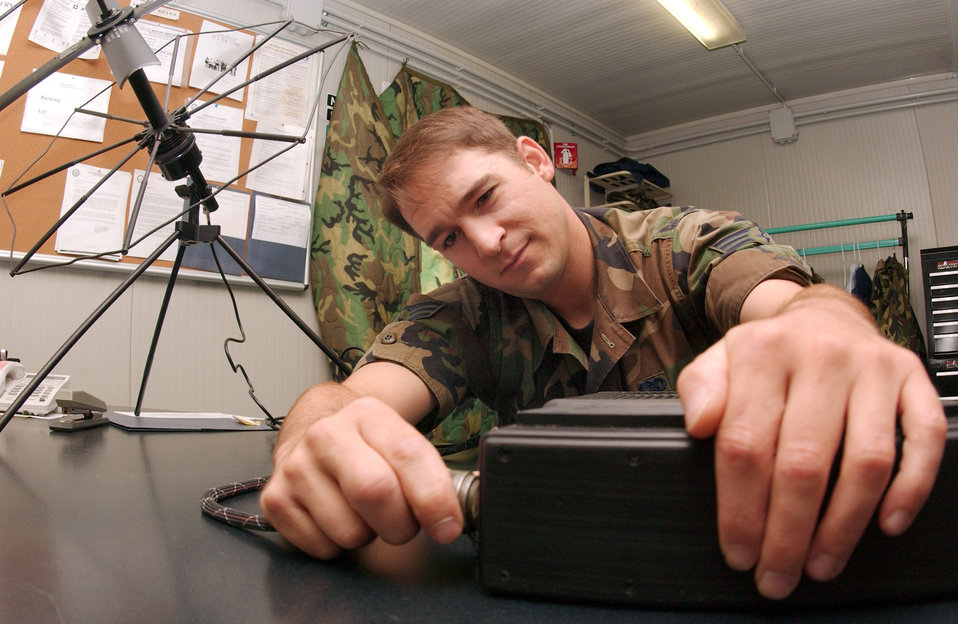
Wired up

AVIANO AIR BASE, Italy -- Senior Airman Steven Hazelett performs an operational check on a satellite communications radio unit here July 8. Airman Hazelett is assigned to the 31st Communications Squadron's wideband radio shop.